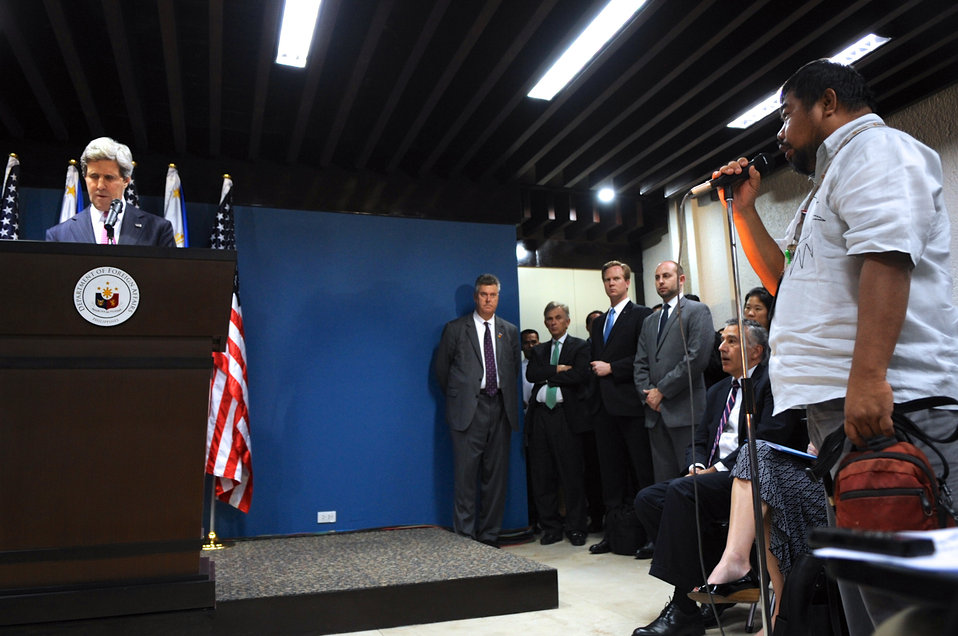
Secretary Kerry Takes Notes on a Question During a News Conference

U.S. Secretary of State John Kerry jots down notes as he listens to a question during a news conference with Foreign Secretary Albert del Rosario in Manila, Philippines, on December 17, 2013.